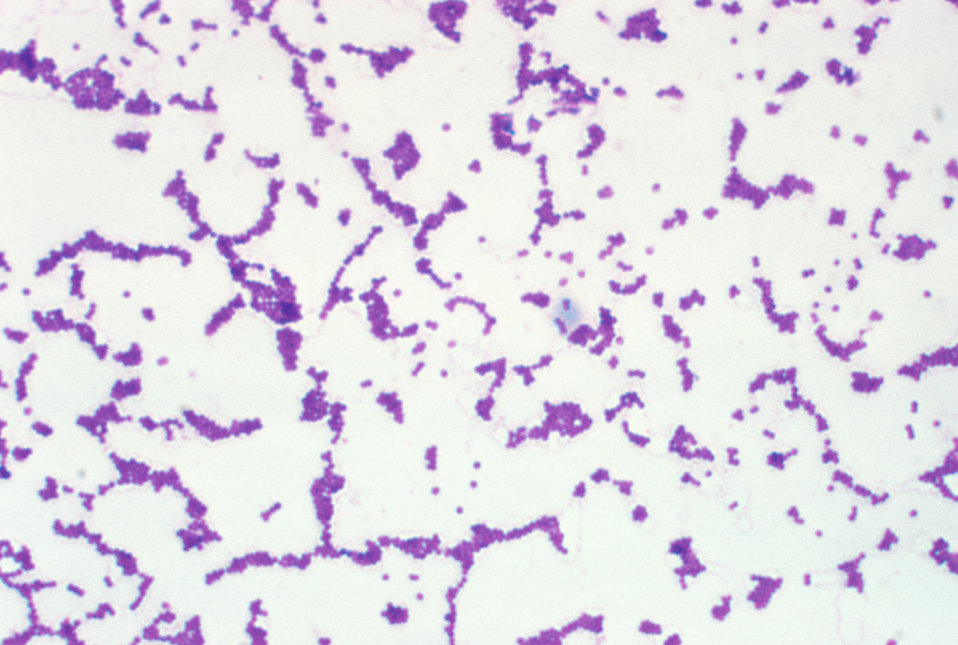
Photomicrograph of Gram-positive Group D Streptococcus bacteria magnified 250X.